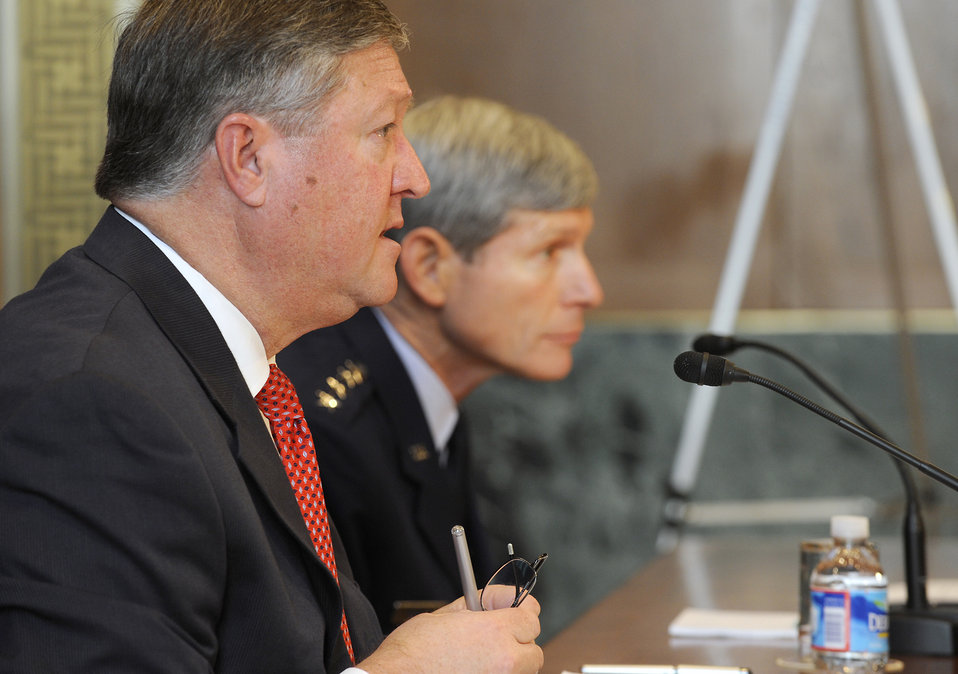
FY 13 budget testimony

Secretary of the Air Force Michael Donley and Air Force Chief of Staff Gen. Norton Schwartz provide testimony about the Air Force’s FY13 budget request before the U.S. Senate Appropriations Subcommittee on Defense on March 14, 2012, in Washington, D.C.